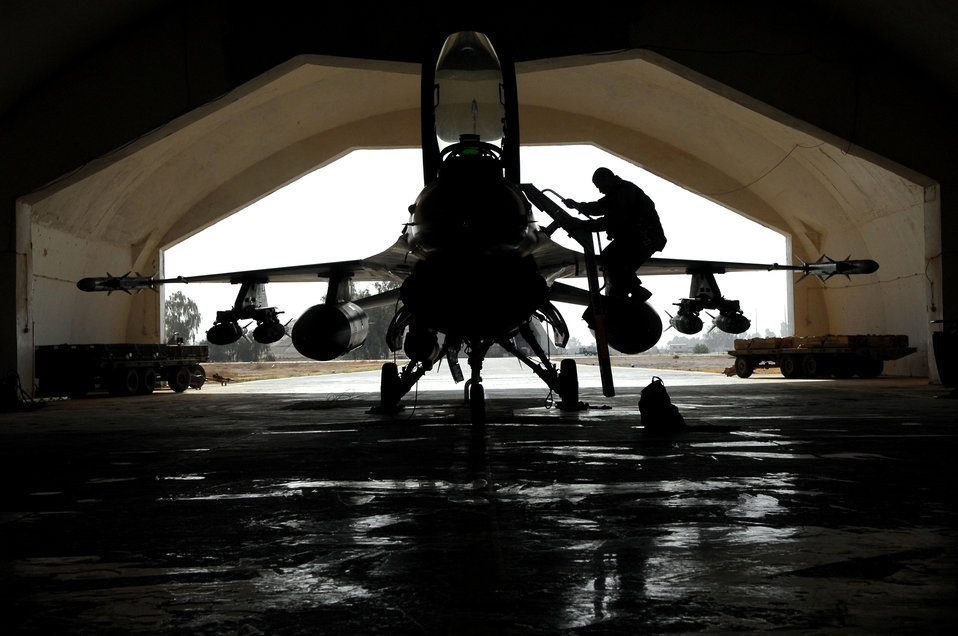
Ready to rumble

Lt. Col. Brick Izzi climbs into an F-16 Fighting Falcon before a combat sortie April 24 at Balad Air Base, Iraq. Pilots are given mission briefs on topics including weather and intelligence information before launch. Colonel Izzi is the 421st Expeditionary Fighter Squadron commander.